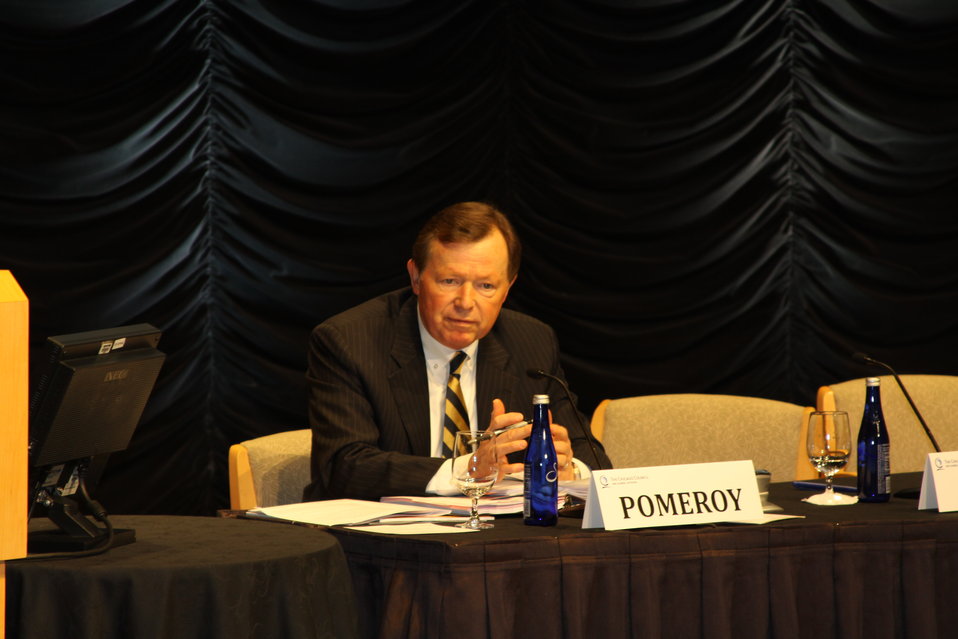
Earl Pomeroy Delivers Remarks

Former U.S. Representative for North Dakota Earl Pomeroy delivers remarks at the Chicago Council on Global Affairs' Symposium on Global Agriculture and Food Security in Washington, D.C., on May 24, 2011.